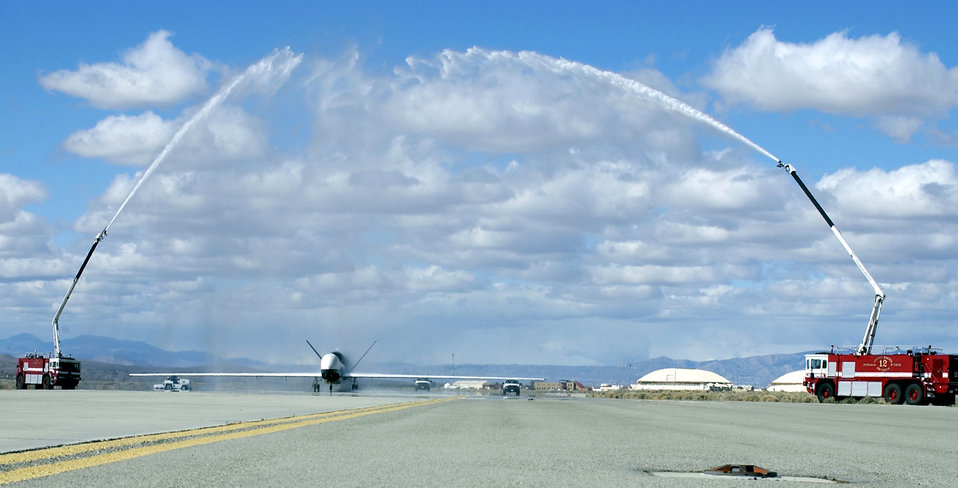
Global Hawk returns

EDWARDS AIR FORCE BASE, Calif. -- After supporting the Global War on Terror for three years, Global Hawk unmanned aerial vehicle number three (UAV-3) received its official homecoming today when its wheels touched down at 11:30 a.m. Pacific Time at Edwards Air Force Base, Calif.